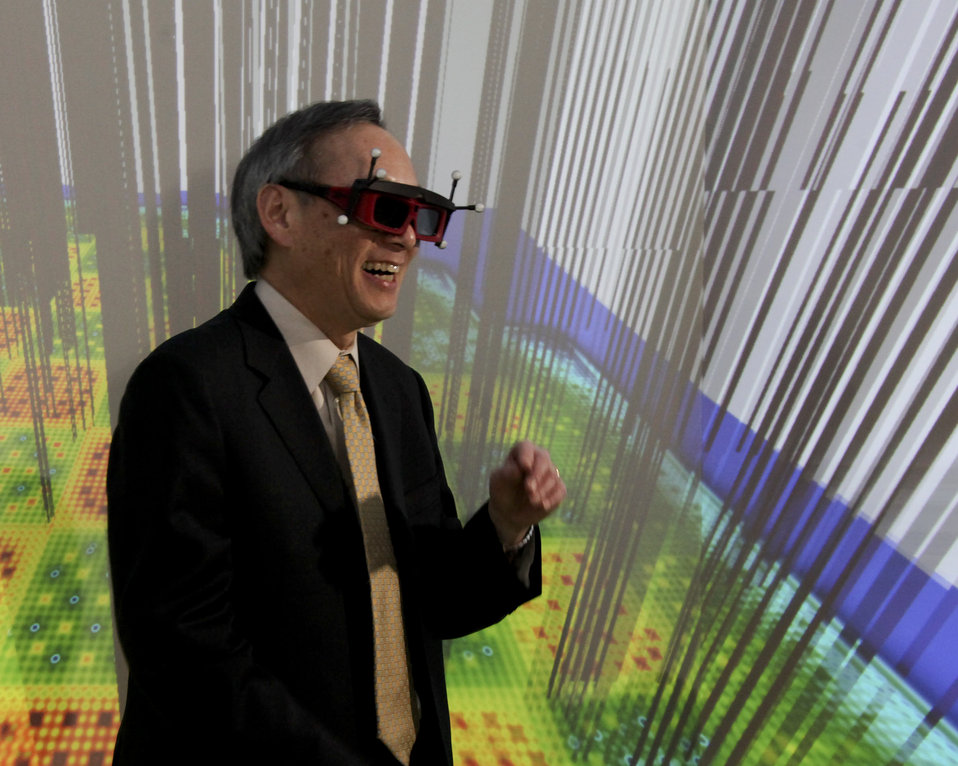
Energy Secretary Steven Chu views a simulated nuclear reactor core at Oak Ridge National Laboratory's Consortium for Advanced Simulation of Light Water Reactors on February 15, 2012.